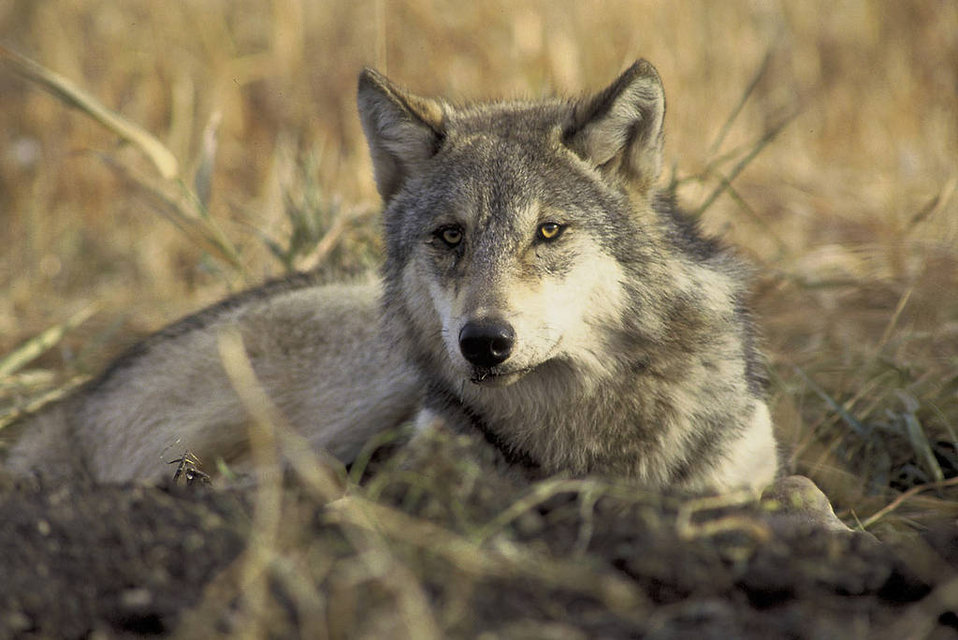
Gray wolf